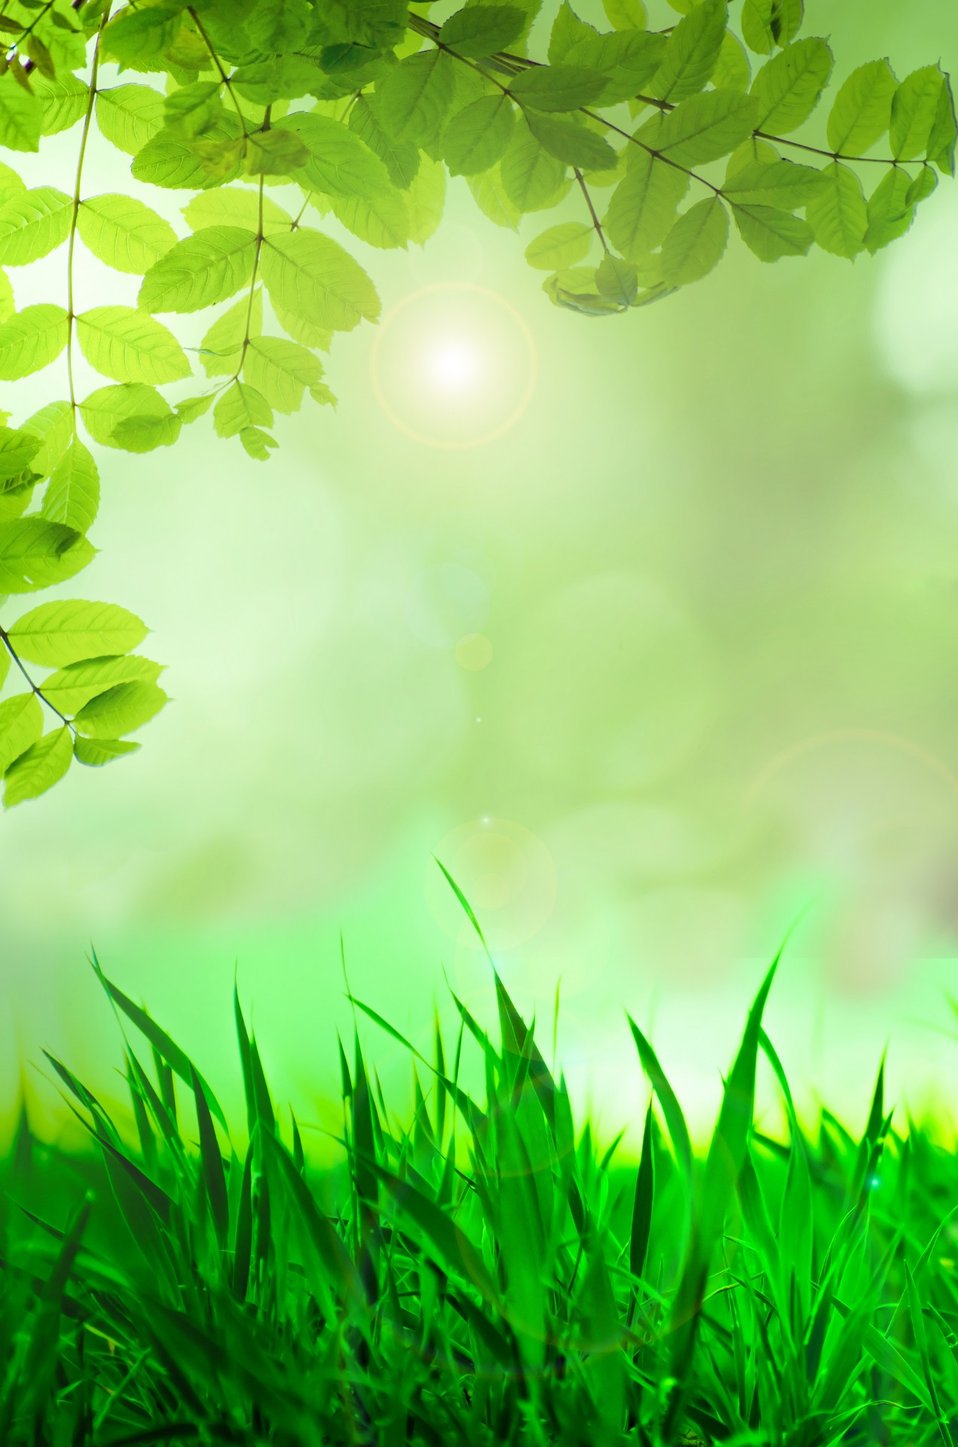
Natural green background.